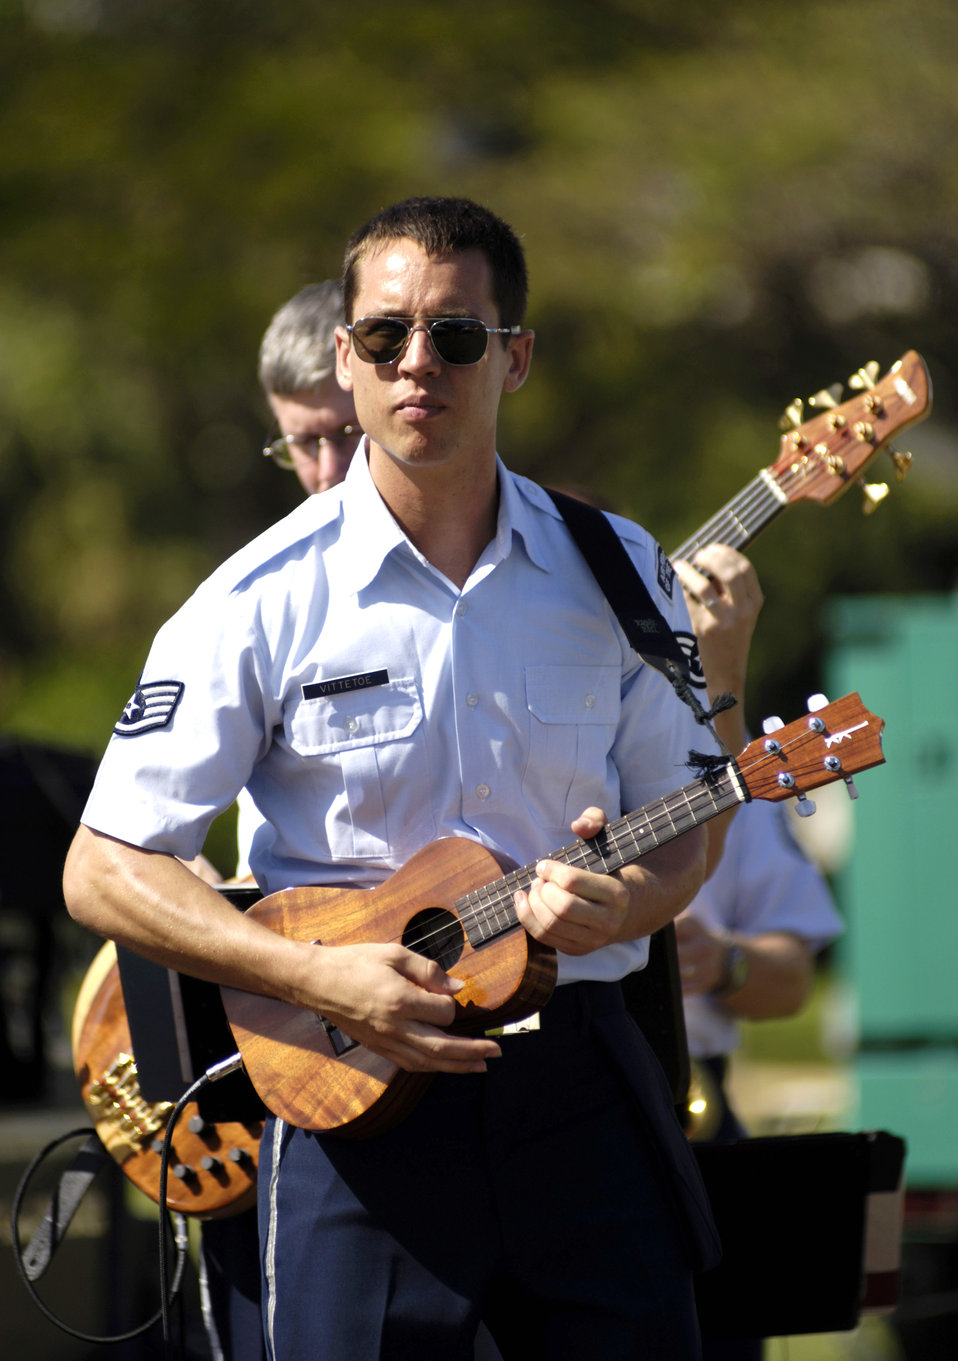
Twilight Tattoo

Staff Sgt. John Kukan plays the ukulele during the 10th Annual Twilight Tattoo at Fort DeRussy, Hawaii, on Saturday, May 13, 2006. The event features bands from all the services.